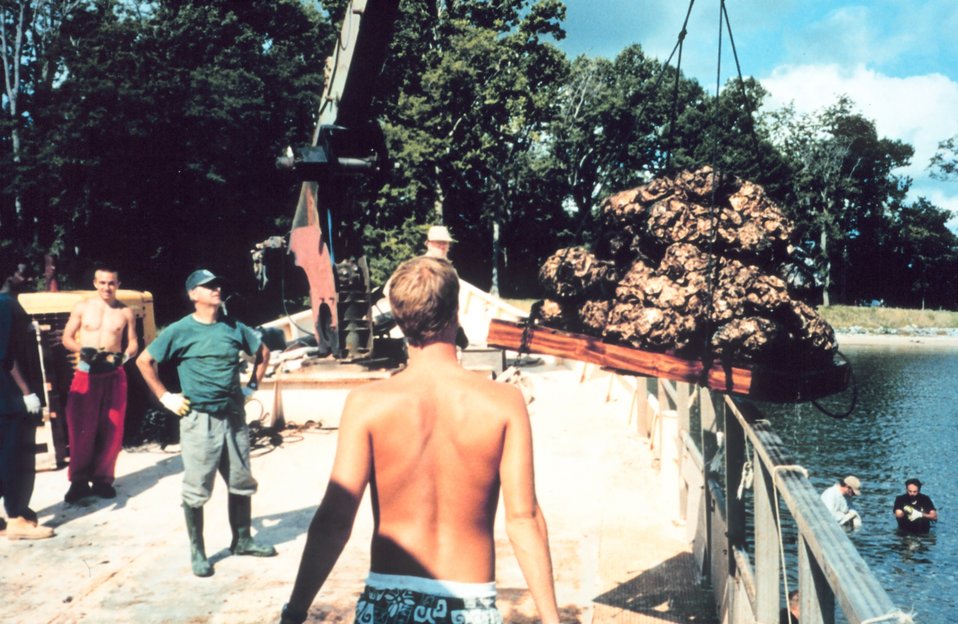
Volunteers assist the Oyster Recovery Partnership in their effort to transplant oyster spat before the population is decimated by the Stylochus flatworm. Pallets are loaded with bags containing the spat and brought on board the ROBERT LEE.